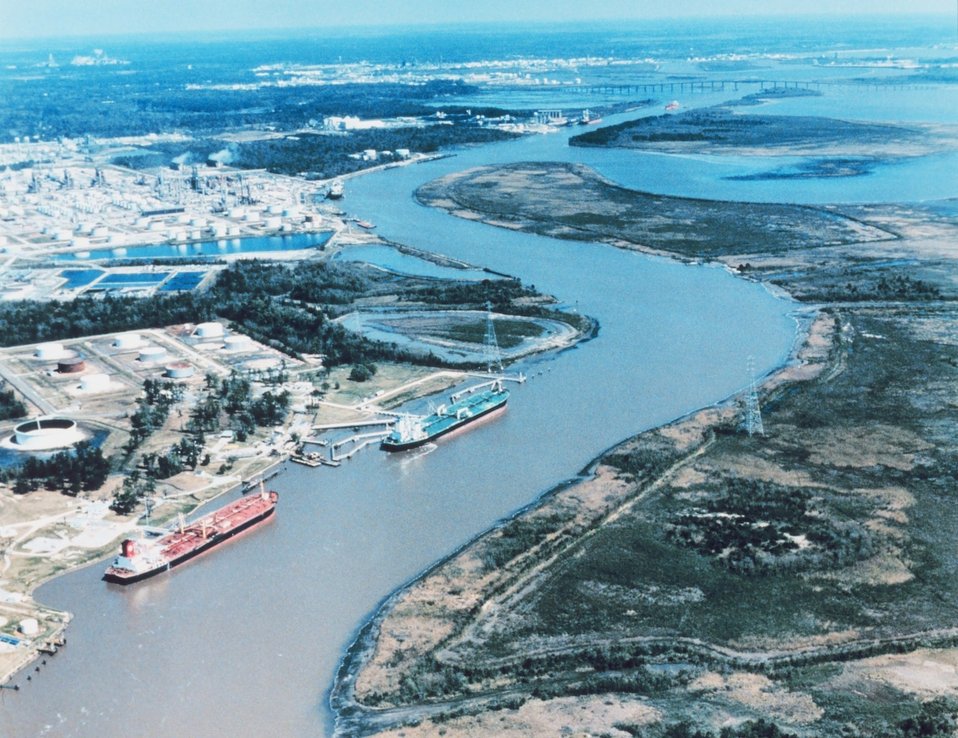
3013 North Latitude 9313 West Longitude.